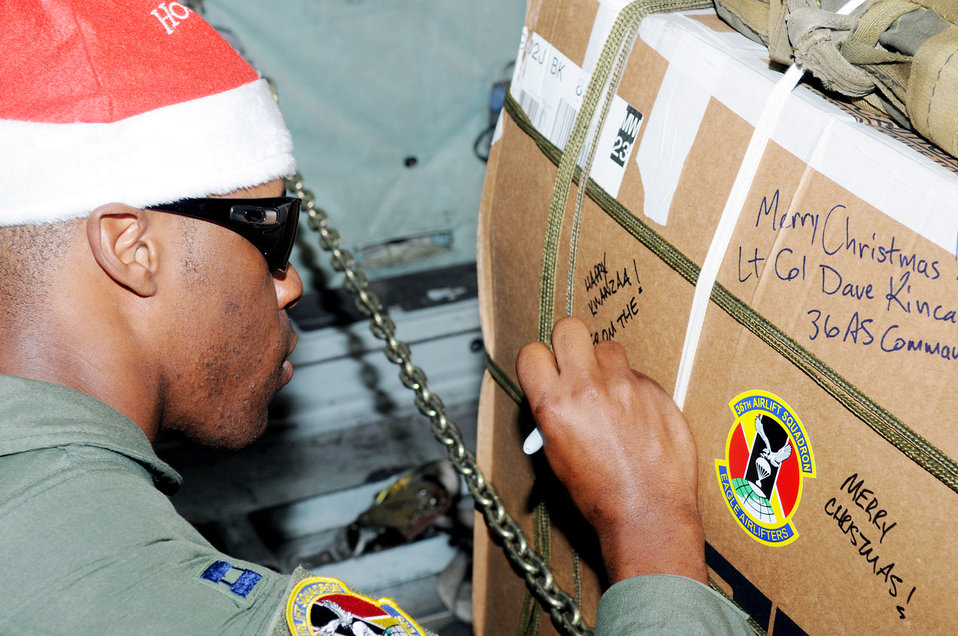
Greetings of the season

Capt. Adam Cole, 36th Airlift Squadron pilot, writes a holiday greeting on one of the boxes packed in support of Operation Christmas Drop Dec. 17, 2009, at Andersen Air Force Base, Guam. The operation began in 1952 and Airmen today continue the tradition delivering supplies to remote islands Yap, Palau, Chuuk, Pohnpei and the Northern Mariana Islands.